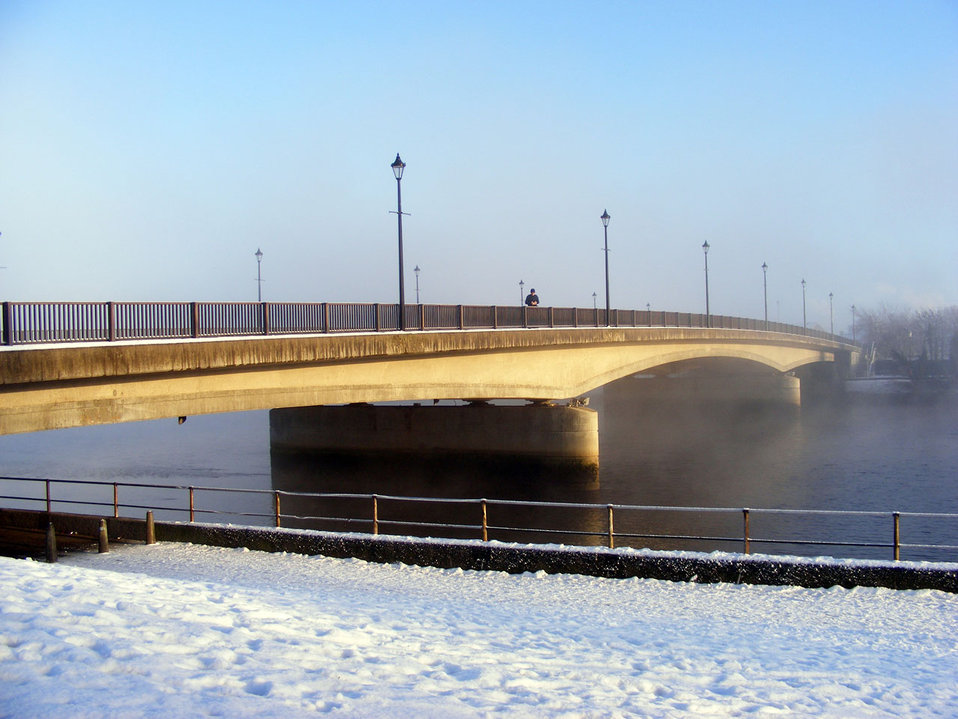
Bridge on the river ness

Bridge over the river ness at inverness.